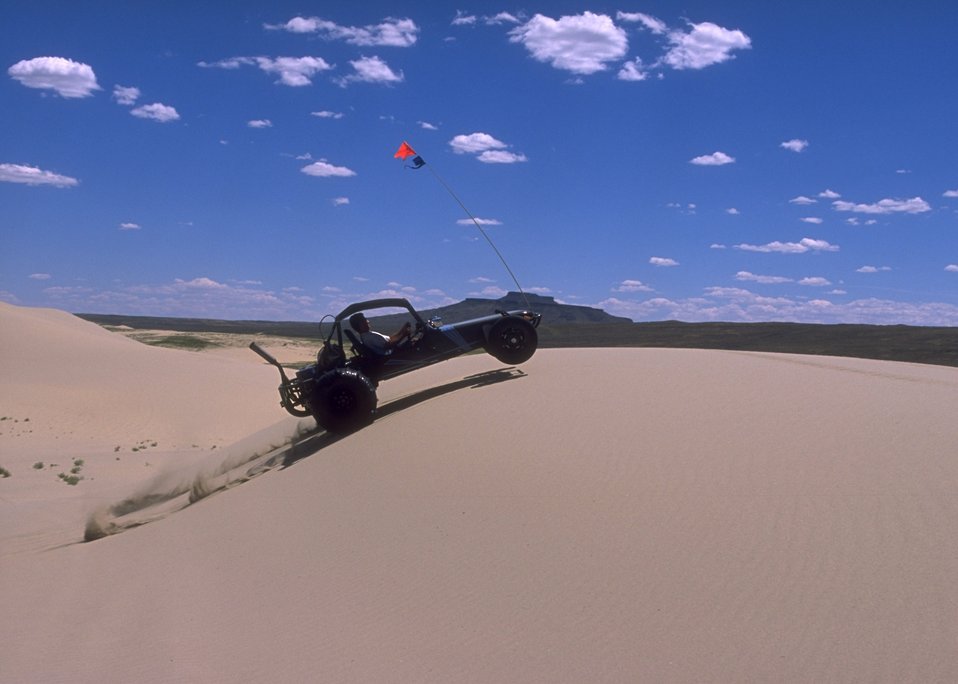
Sand Dunes OHV Area, Rock Springs Field Office.